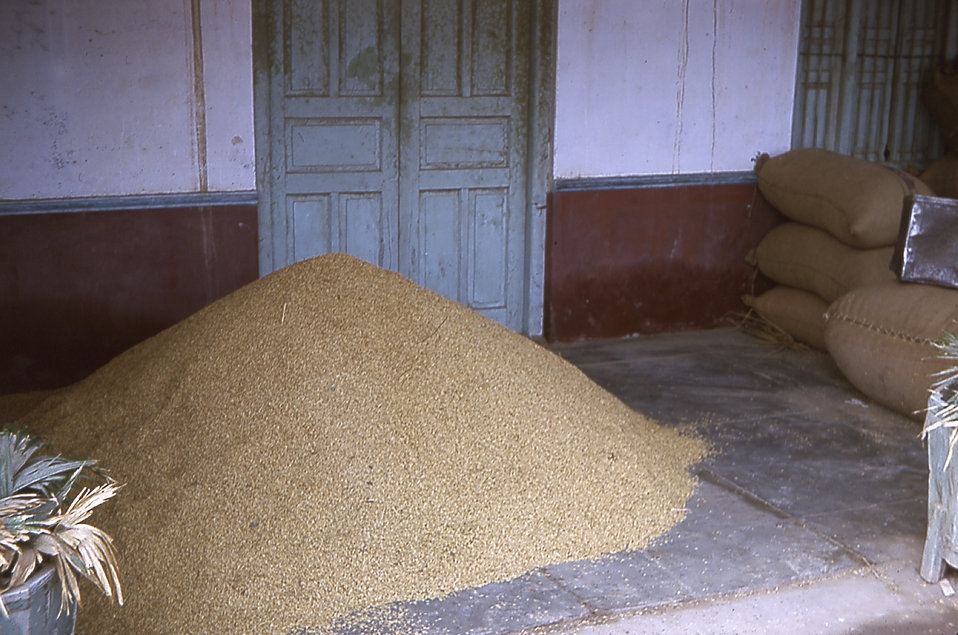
The photo depicts a common method of rice storage in Gujarat, India villages.